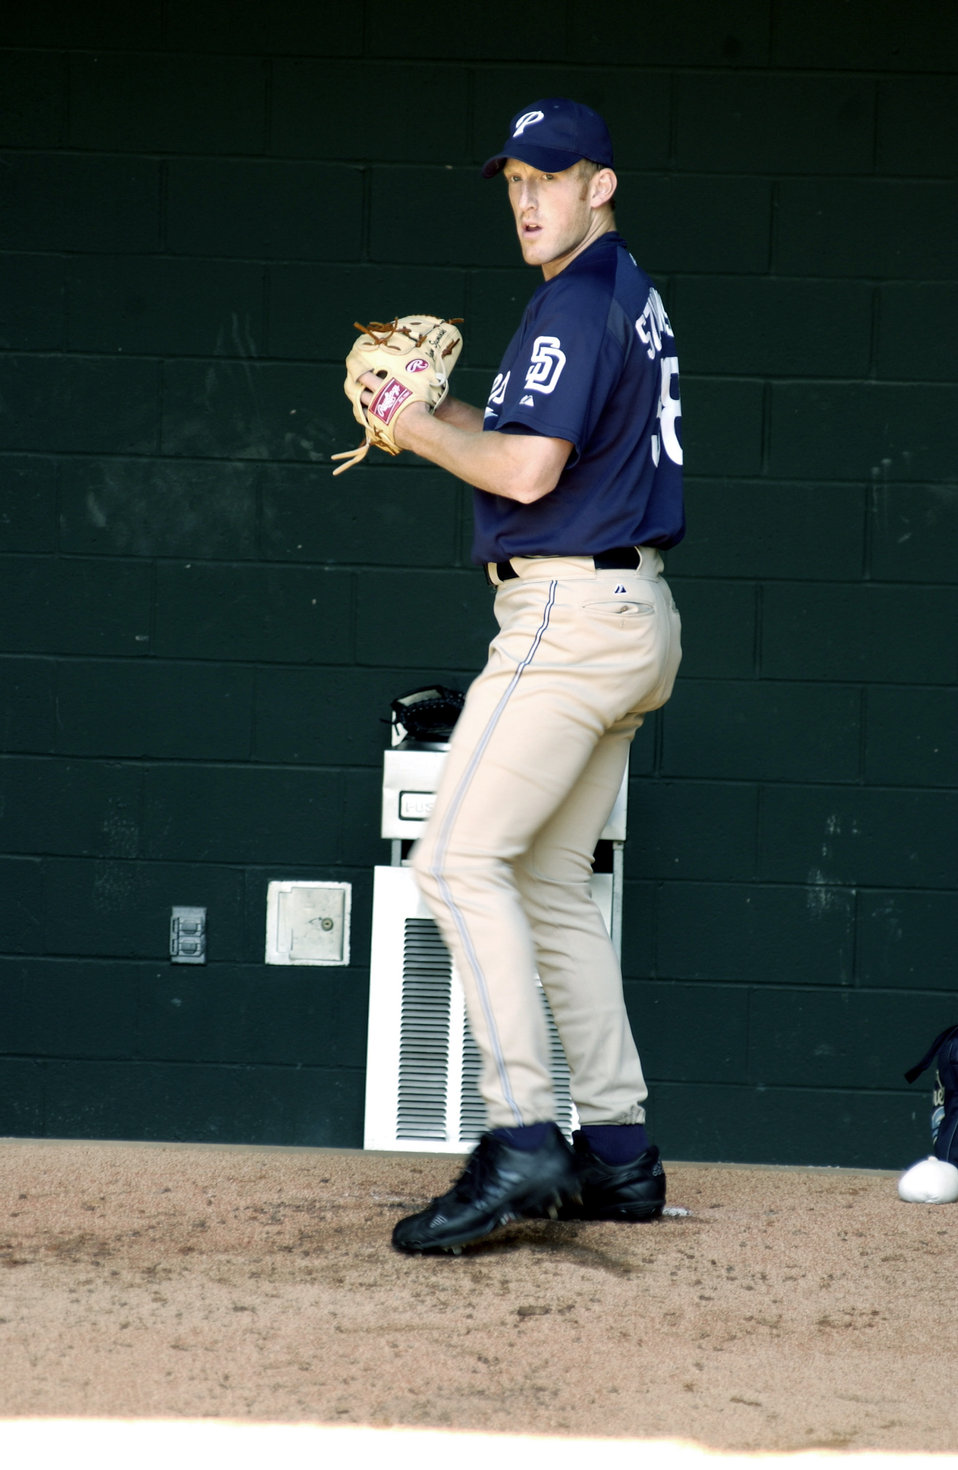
Reservist pitches for Padres

ATLANTA -- First Lt. Jason Szuminski, relief pitcher for the San Diego Padres, warms up in the bullpen during a game here against the Braves. Lieutenant Szuminski is the only Air Force reservist in Major League Baseball.